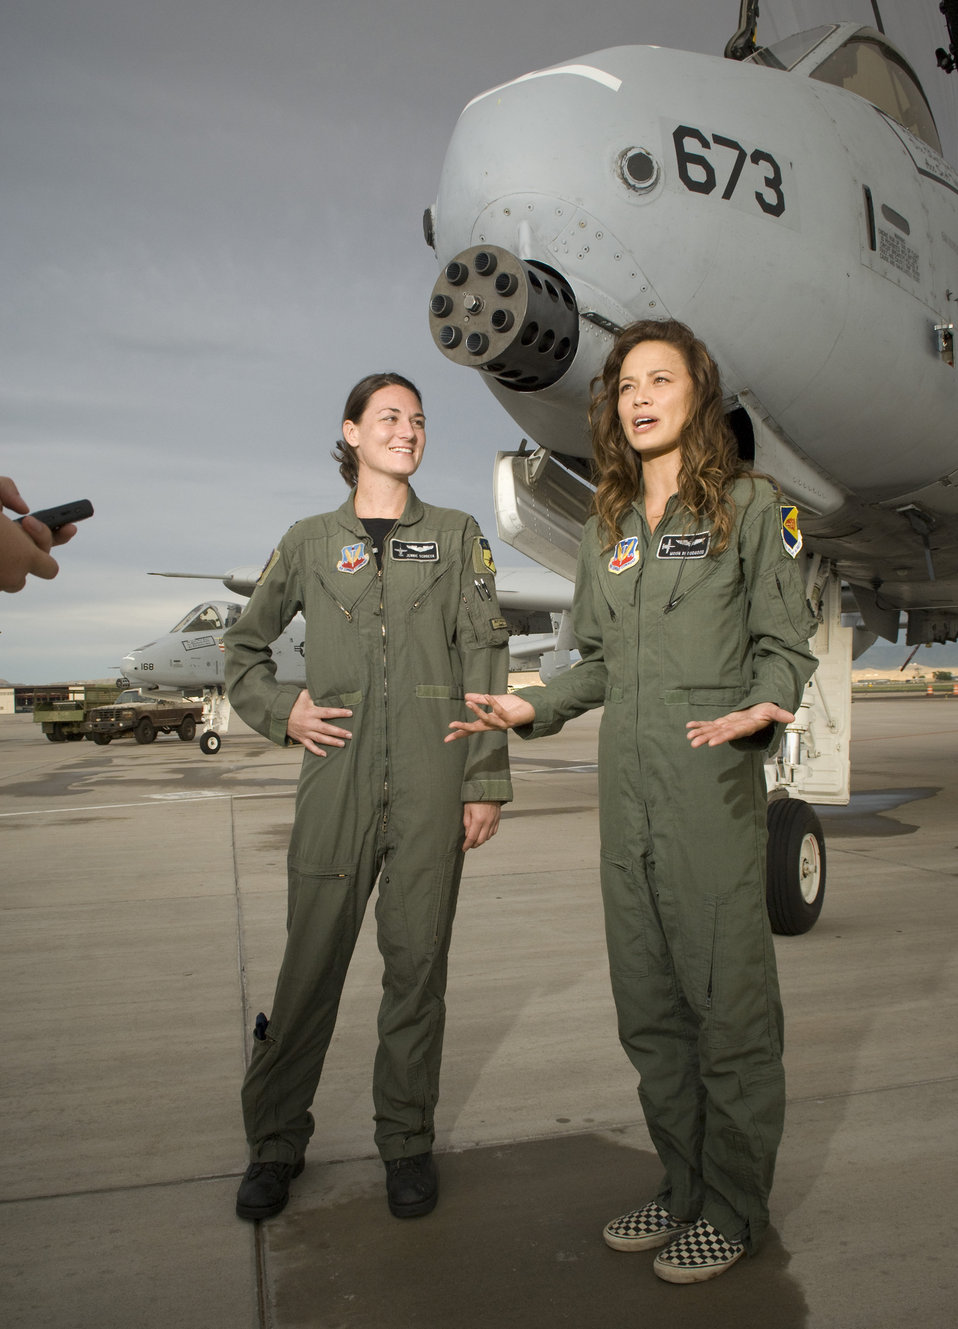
Airmen onboard Terminator Salvation

Capt. Jennie Schoeck and actress Moon Bloodgood met in front of an A-10 fighter for an interview with the news media, during the production of Terminator Salvation at Kirtland Air Force Base, NM on July 18, 2008. Capt. Schoeck is assigned to the 358 Fighter Squadron, Davis-Monthan Air Force Base, AZ was the A-10 fighter advisor for the production. Moon Bloodgood portrays a lead resistance pilot in the movie. The 358th Fighter Squadron is the Air Force's only active-duty A/OA-10A formal training unit the 358th FS conducts all formal course directed aircraft transition, day/night weapons and tactics employment, day/night air refueling, air combat and dissimilar air combat maneuver training for pilot initial qualification, requalification and instructor qualification in the A-10A for the Combat Air Forces.